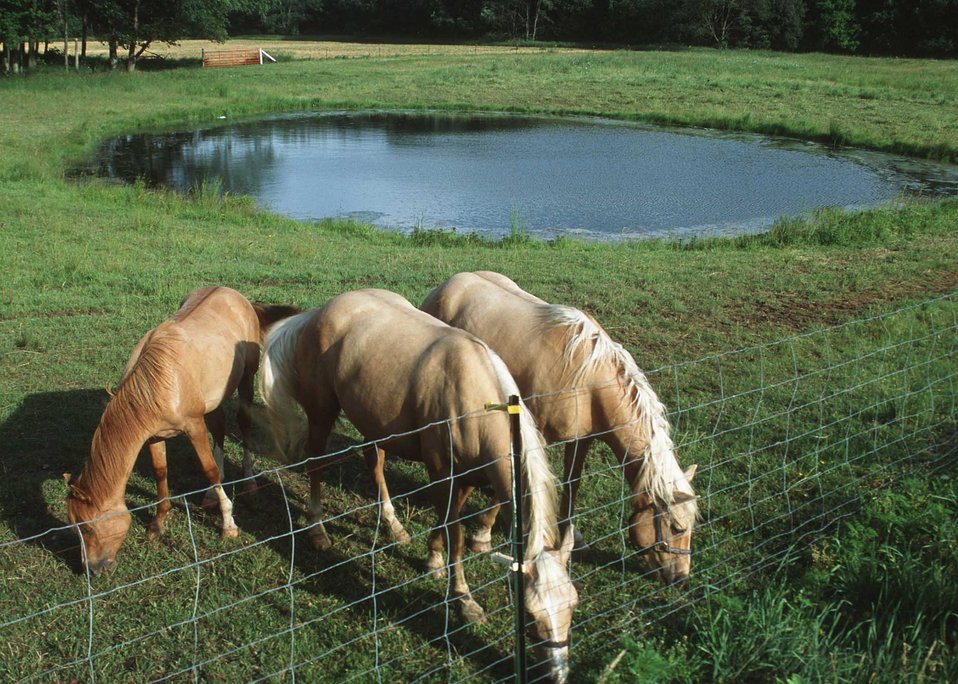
Small farm pond in pasture with horses. Allegan County, Michigan.